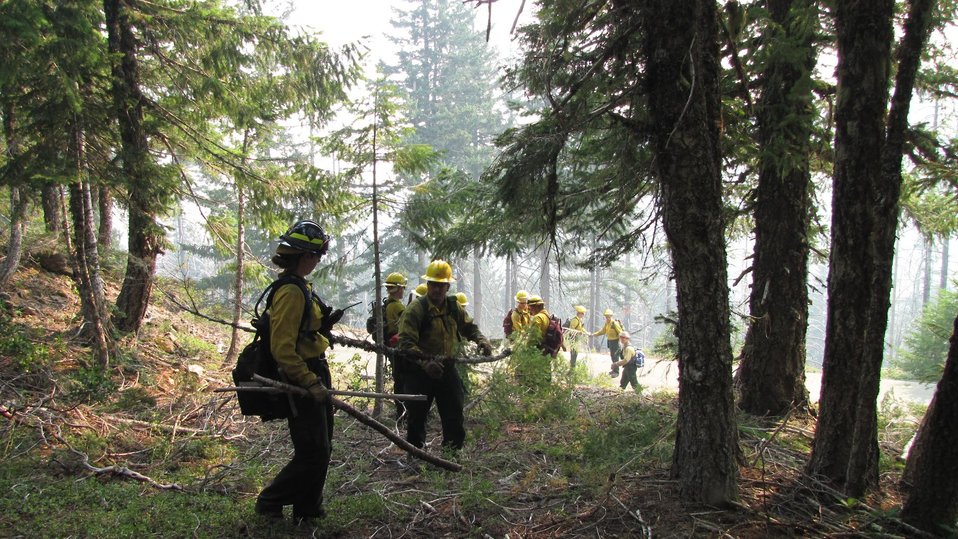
Fire crew works to clear area to prevent spread of the Big Windy Complex Fires. The Big Windy Complex Fires consists of three fires: The Big Windy Fire, Calvert Peak Fire, and Jenny Fire (formerly the Windy 16 Fire) near Grants Pass, OR. The fires began on Jul. 26, 2013 by lighting have consumed approximately 7, 499 acres.